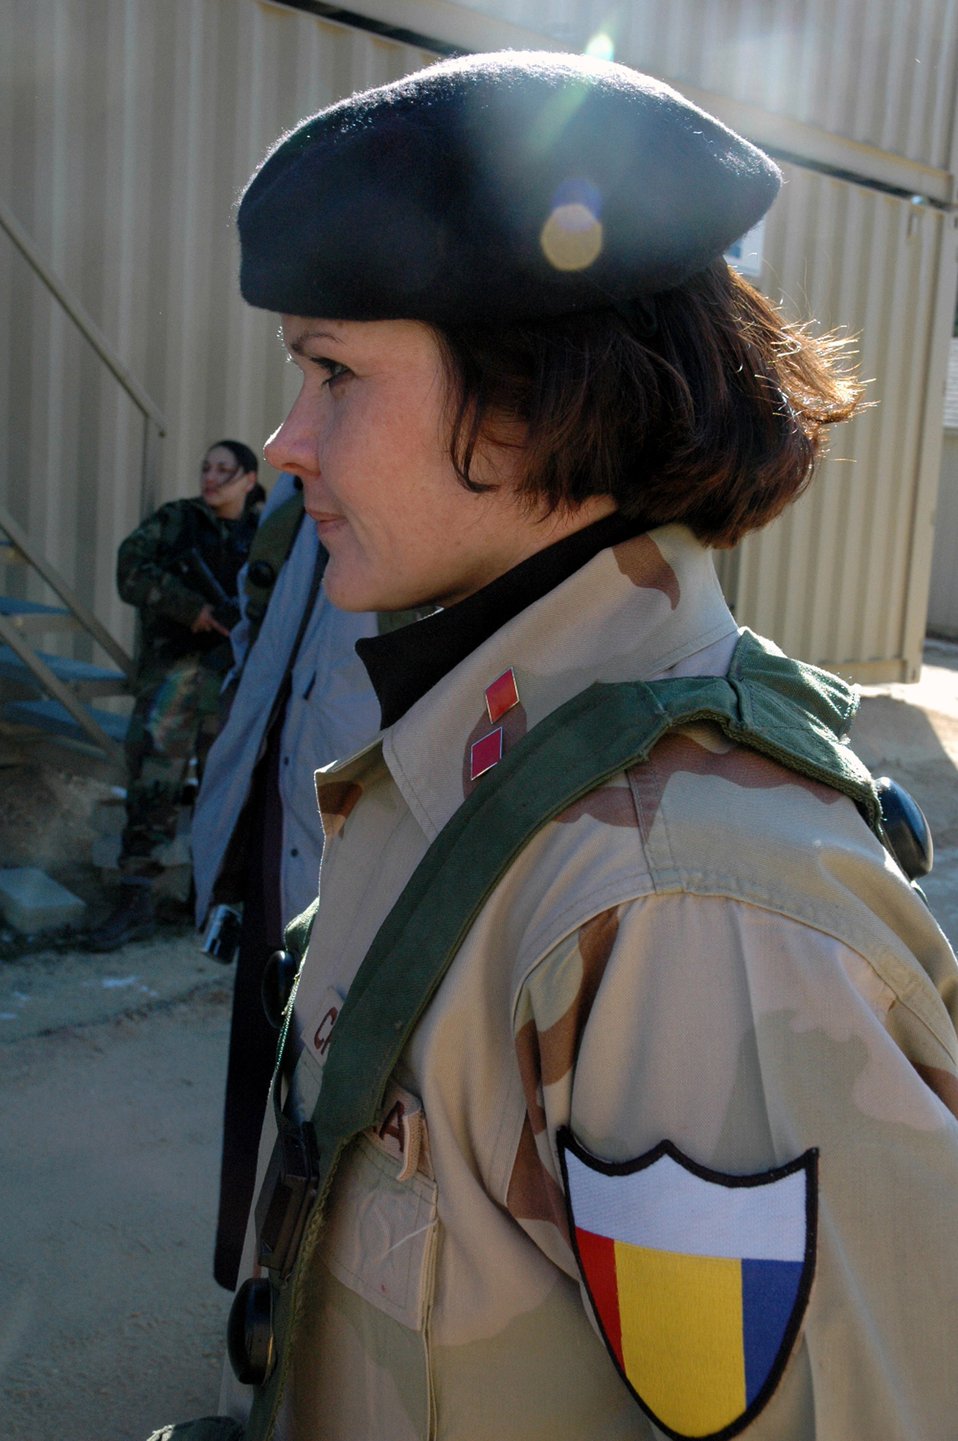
Eagle Flag

Master Sgt. Patricia Granan plays the role of a military member in the